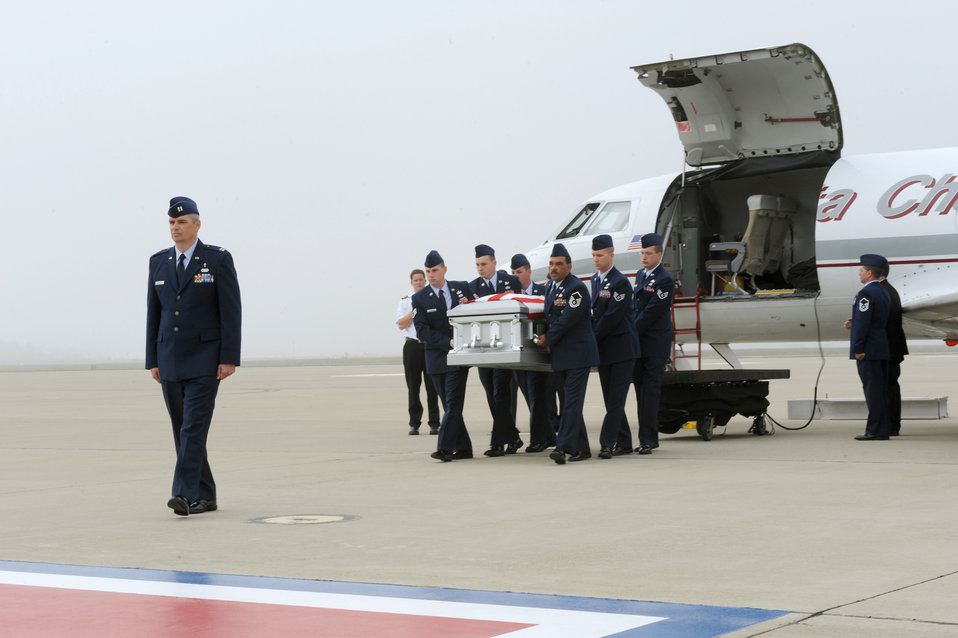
Memorial service for fallen Airman

Members of the of 30th Civil Engineer Squadron explosive ordnance disposal flight here carry Senior Airman Daniel Johnson to a hearse Oct. 13, 2010, at Vandenberg Air Force Base, Calif. Airman Johnson, an EOD technician, was killed in the line of duty Oct. 5, 2010, in Kandahar, Afghanistan.